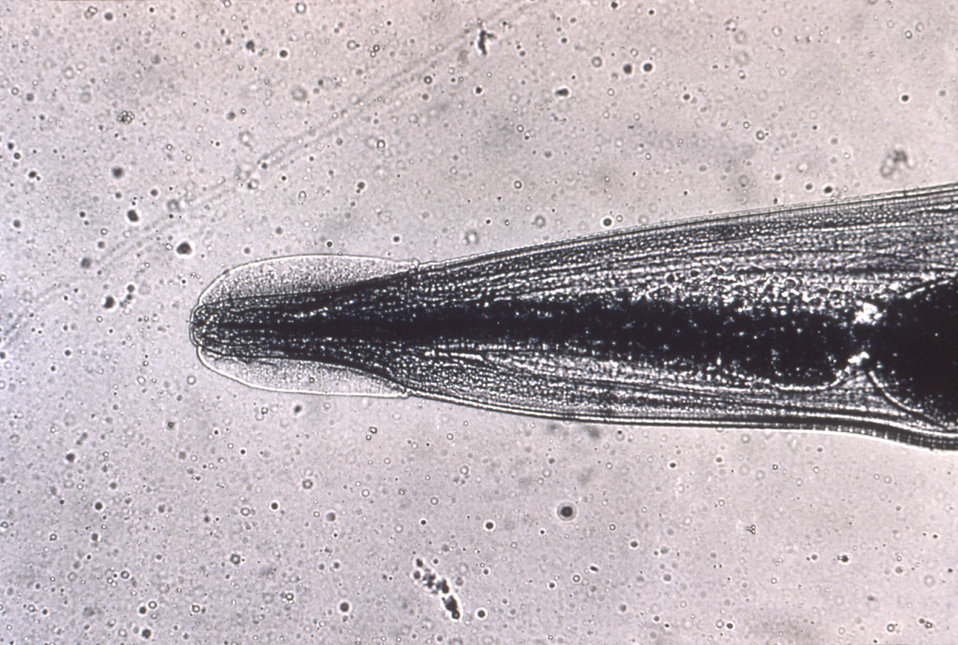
This micrograph reveals the cephalic alae in the head region the nematode Enterobius vermicularis, or human pinworm.